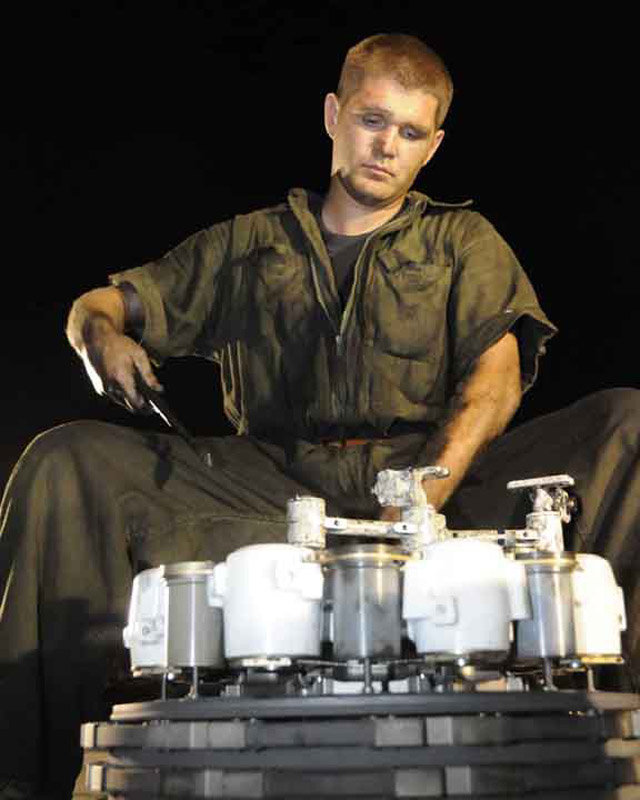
Nocturnal workers

Airman 1st Class Jason Ripkowski wires a brake before putting it back onto a B-1B Lancer May 29 in Southwest Asia. Airman Ripkowski is with the 379th Expeditionary Aircraft Maintenance Squadron and is deployed from Ellsworth Air Force Base, S.D.